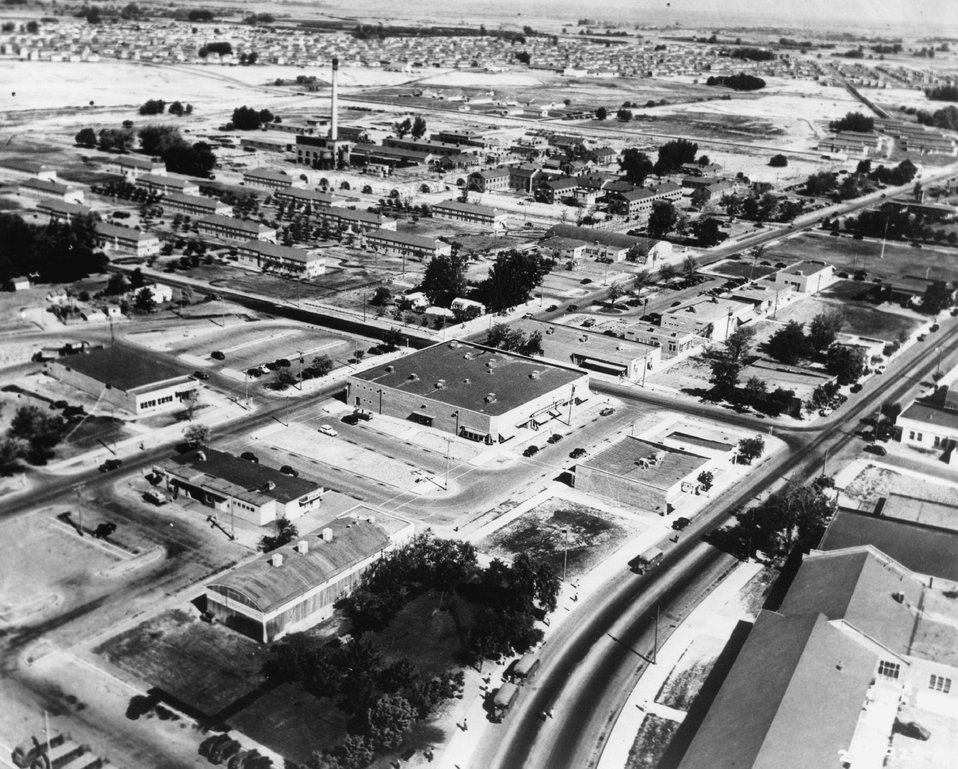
Under direction of the War Department, the combined efforts of science, industry and labor have culminated in the production of the atomic bomb, the most potent weapon in military history. This is an aerial view of Richland showing the housing and business development. c. 1945